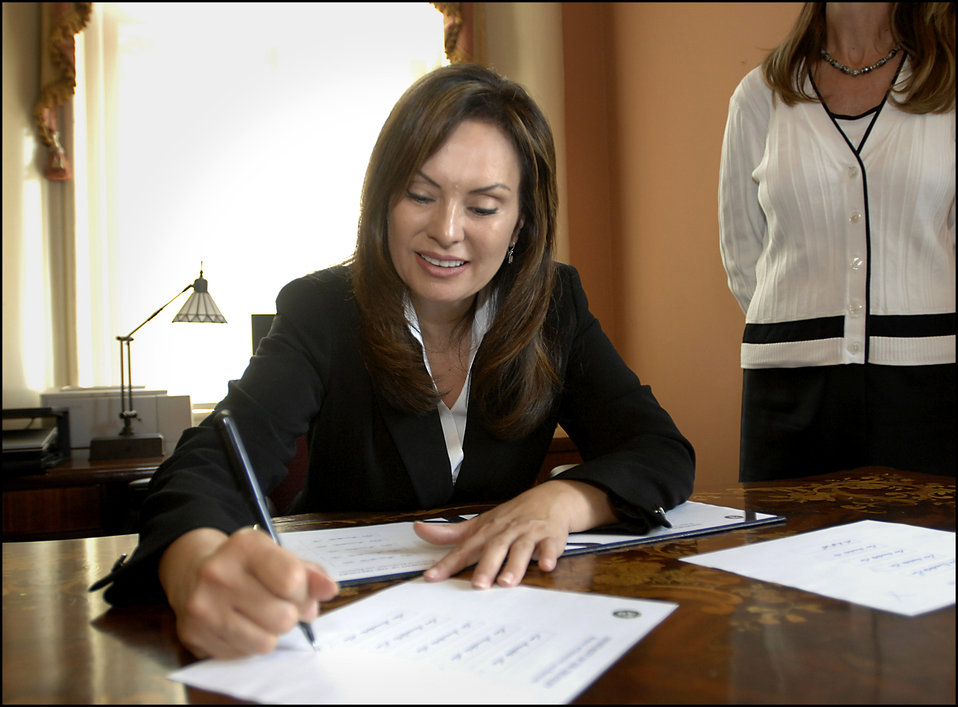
Rosie signing

Treasurer Rios signs her name which will be featured on all new bills printed by the Bureau of Engraving and Printing.